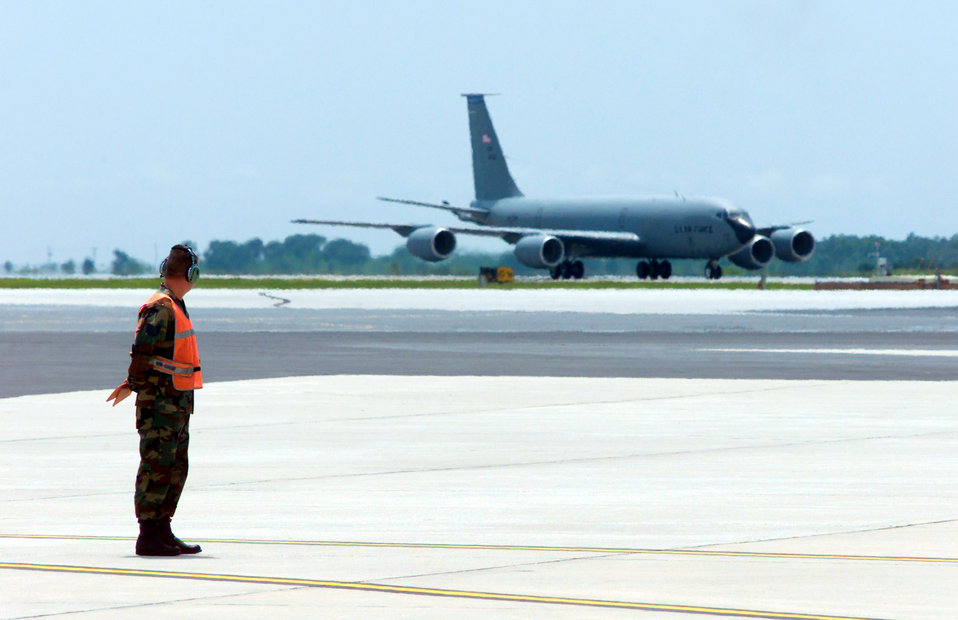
Stratotanker taxi

MACDILL AIR FORCE BASE, Fla. (AFPN) -- Tech. Sgt. Christopher White waits to marshal in a KC-135E Stratotanker returning from Southwest Asia. An Air Force plan to replace aging KC-135s with leased 767s is currently under review by the Department of Defense. White is a crew chief in the 6th Aircraft Maintenance Squadron here.